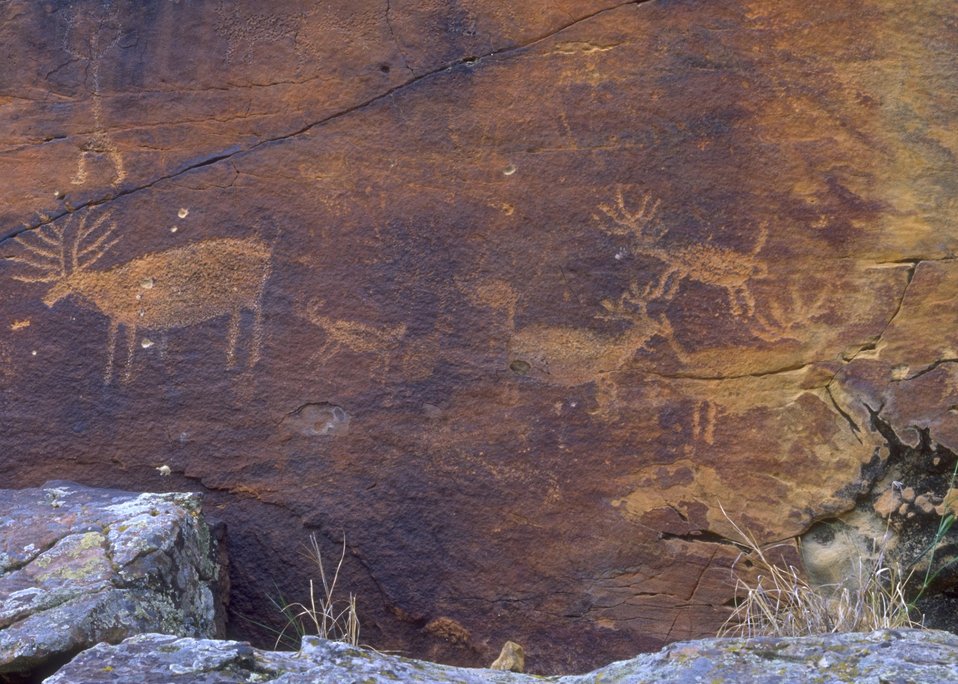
Petroglyph panel in Whoopup Canyon, Newcastle Field Office.